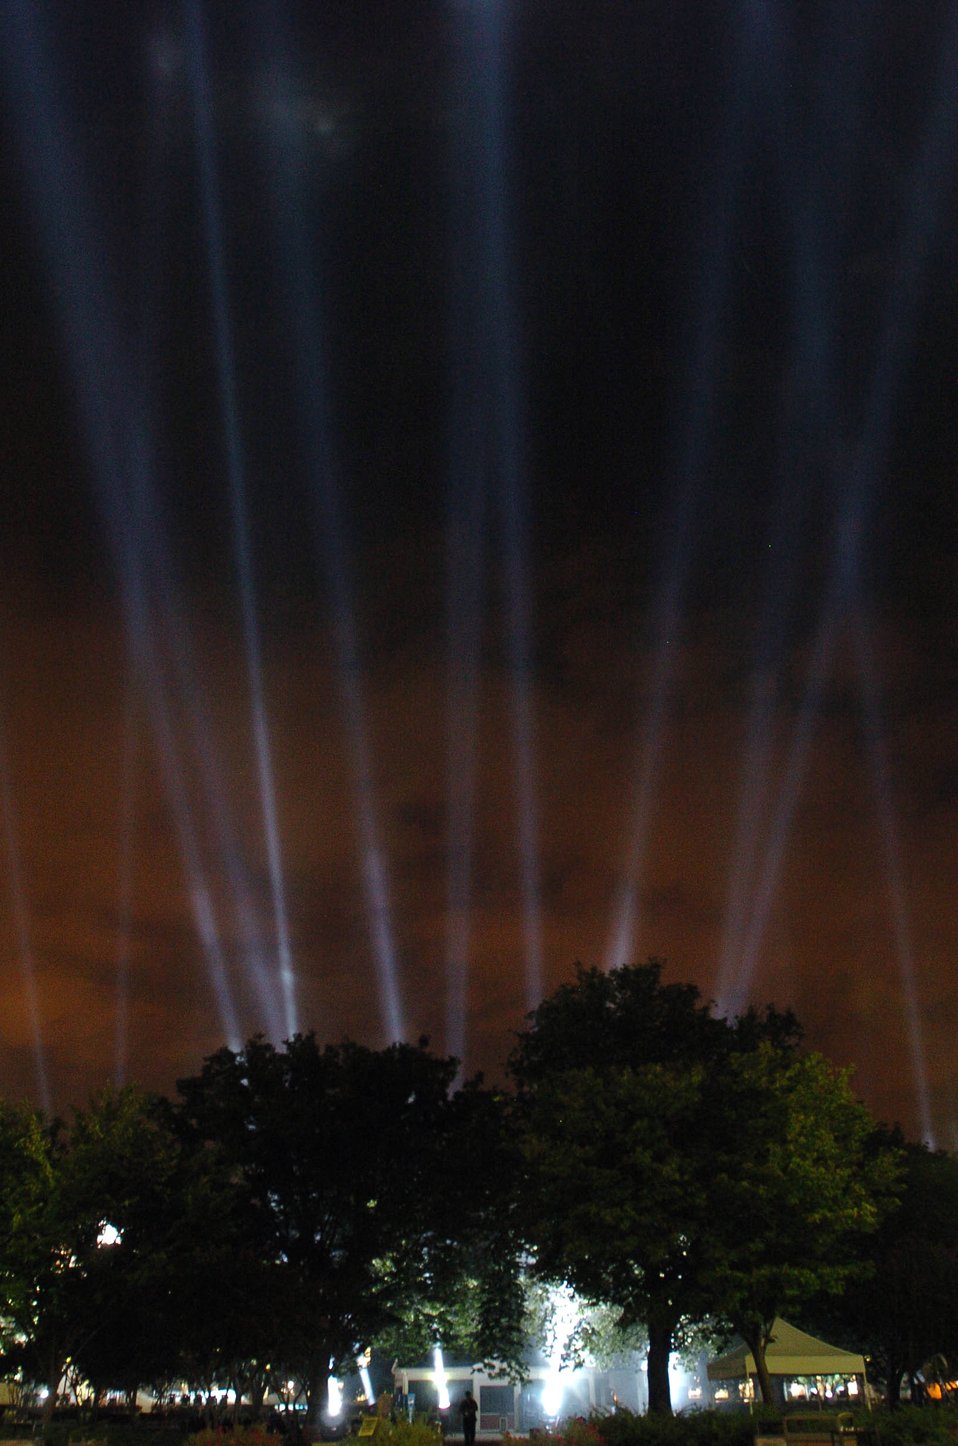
Beams of light honor those who died at Pentagon

During the fifth anniversary of the terrorist attacks, 184 beams of light rise from the courtyard of the Pentagon Sept. 10. The lights are to remember the 184 lives lost when American Airlines Flight 77 crashed into the Pentagon Sept. 11, 2001.